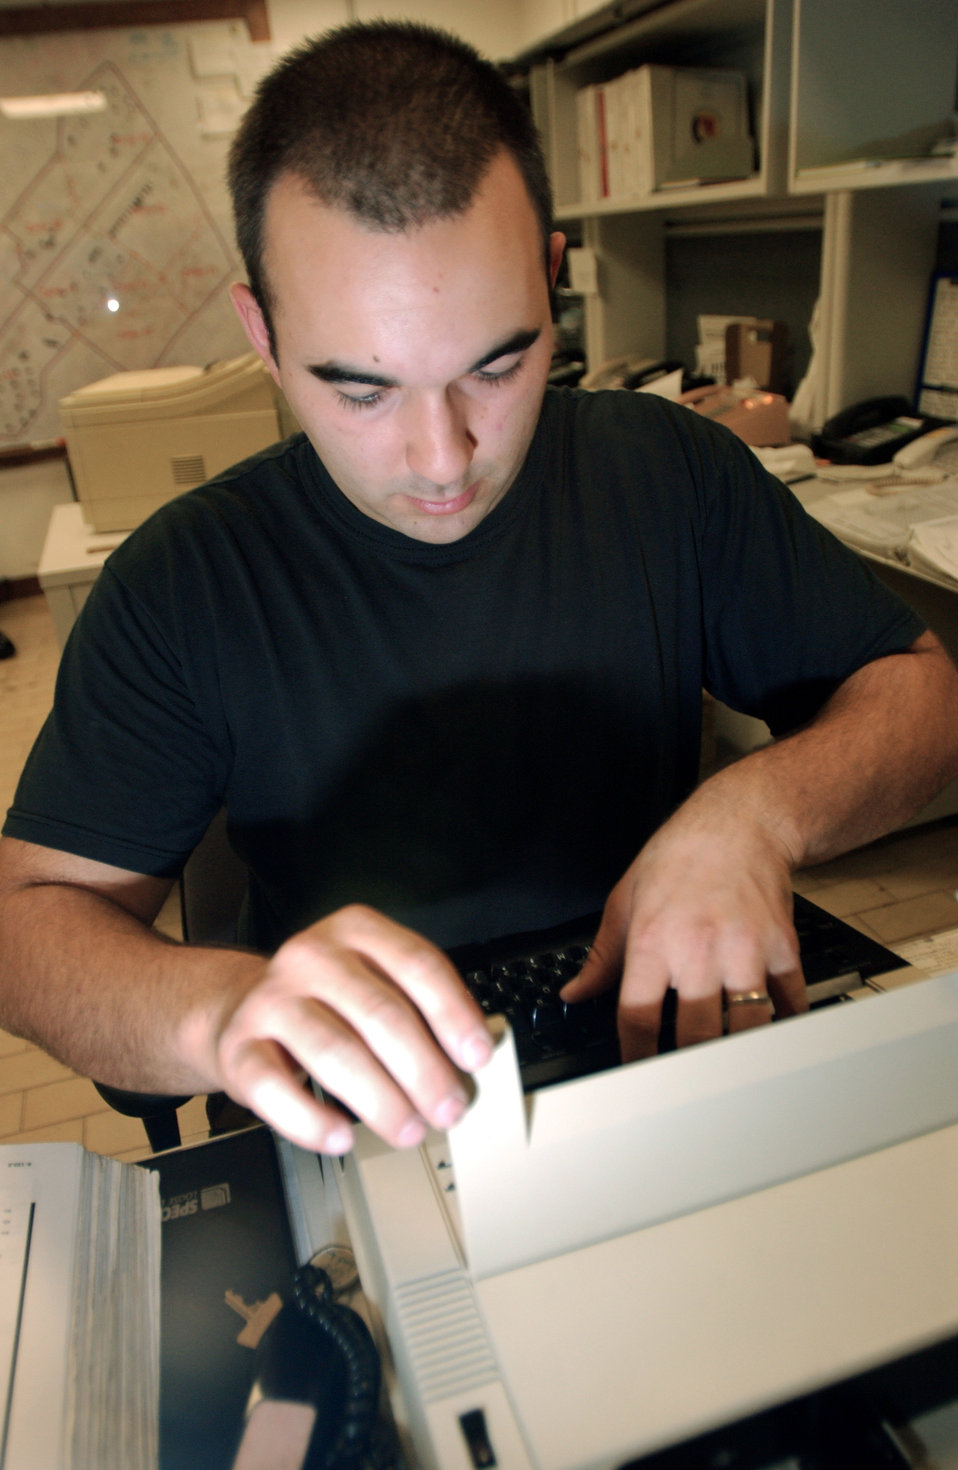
Secure communications

AVIANO AIR BASE, Italy -- Senior Airman Joshua Underwood enters data into the Security Forces Squadron weapons storage security communication system here Oct. 7. Airman Underwood is assigned to the 31st Communications Squadron.